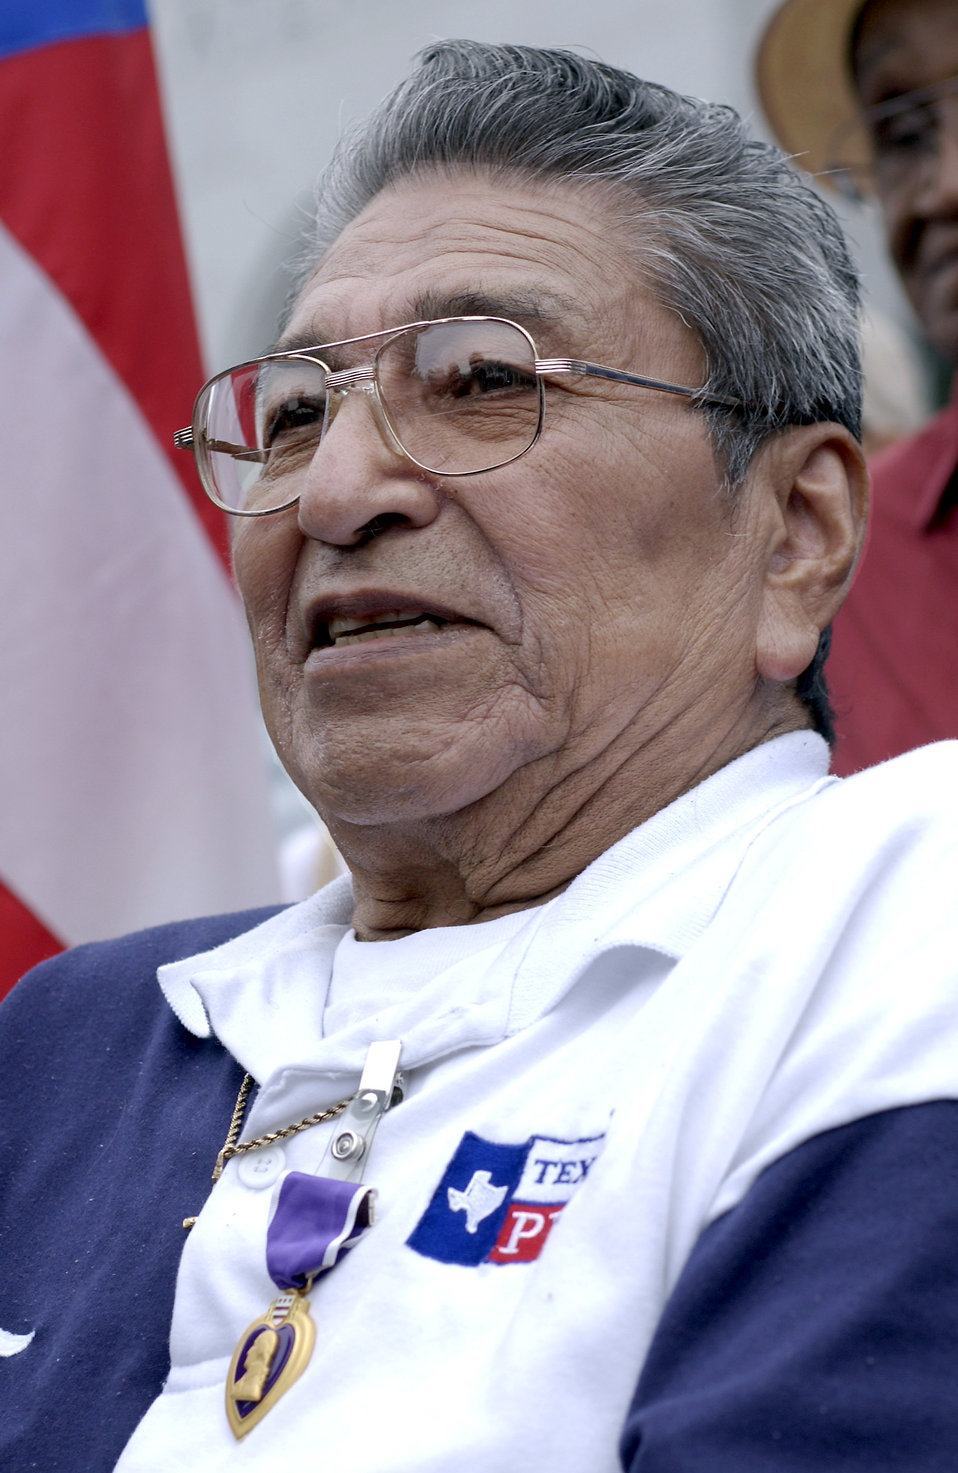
Purple Heart presentation

WASHINGTON -- World War II veteran John Martinez was presented a Purple Heart on May 28 at the World War II Memorial here more than 59 years after his A-20 attack bomber crashed near Rhiems, France, causing a paralyzing spinal-cord injury. Mr. Martinez was a staff sergeant serving as an aerial gunner on the A-20.